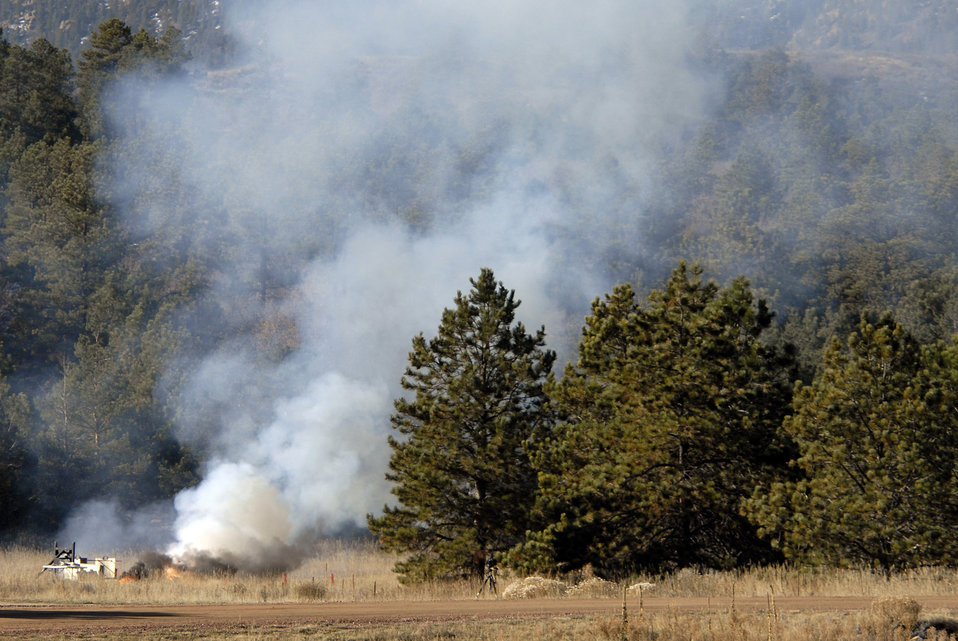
FalconLaunch 6 test-fire ends with a 'bang'

FalconLaunch 6 smolders in Jacks Valley at the U.S. Air Force Academy, Colo., Nov. 4, 2009, after a malfunction caused the rocket to explode during a test firing. Cadets with the FalconLaunch program will investigate to determine the cause of the malfunction.